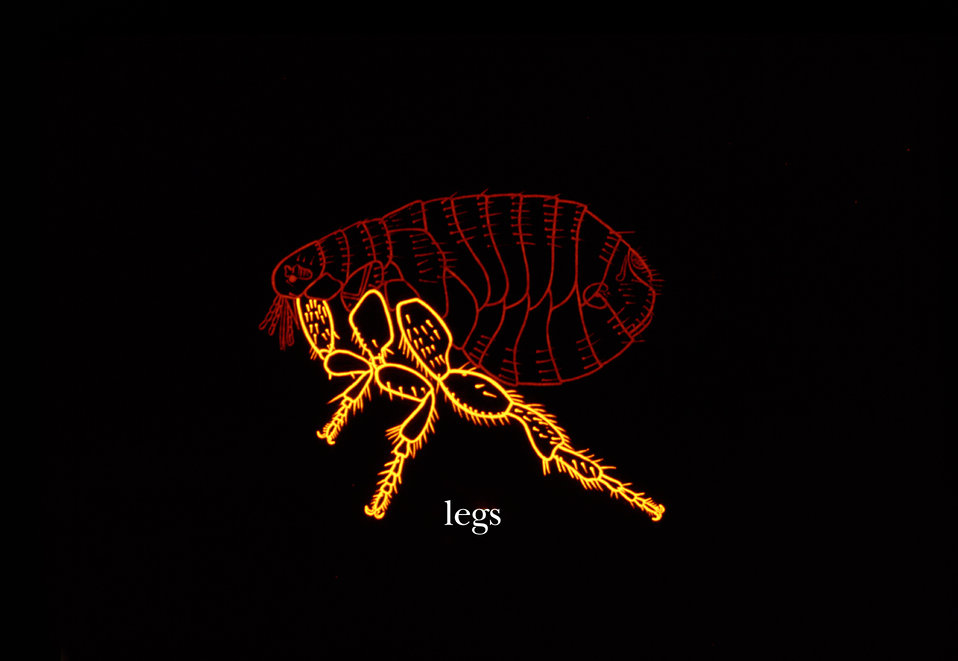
This illustration depicts the morphologic features associated with the leg anatomy of the flea.